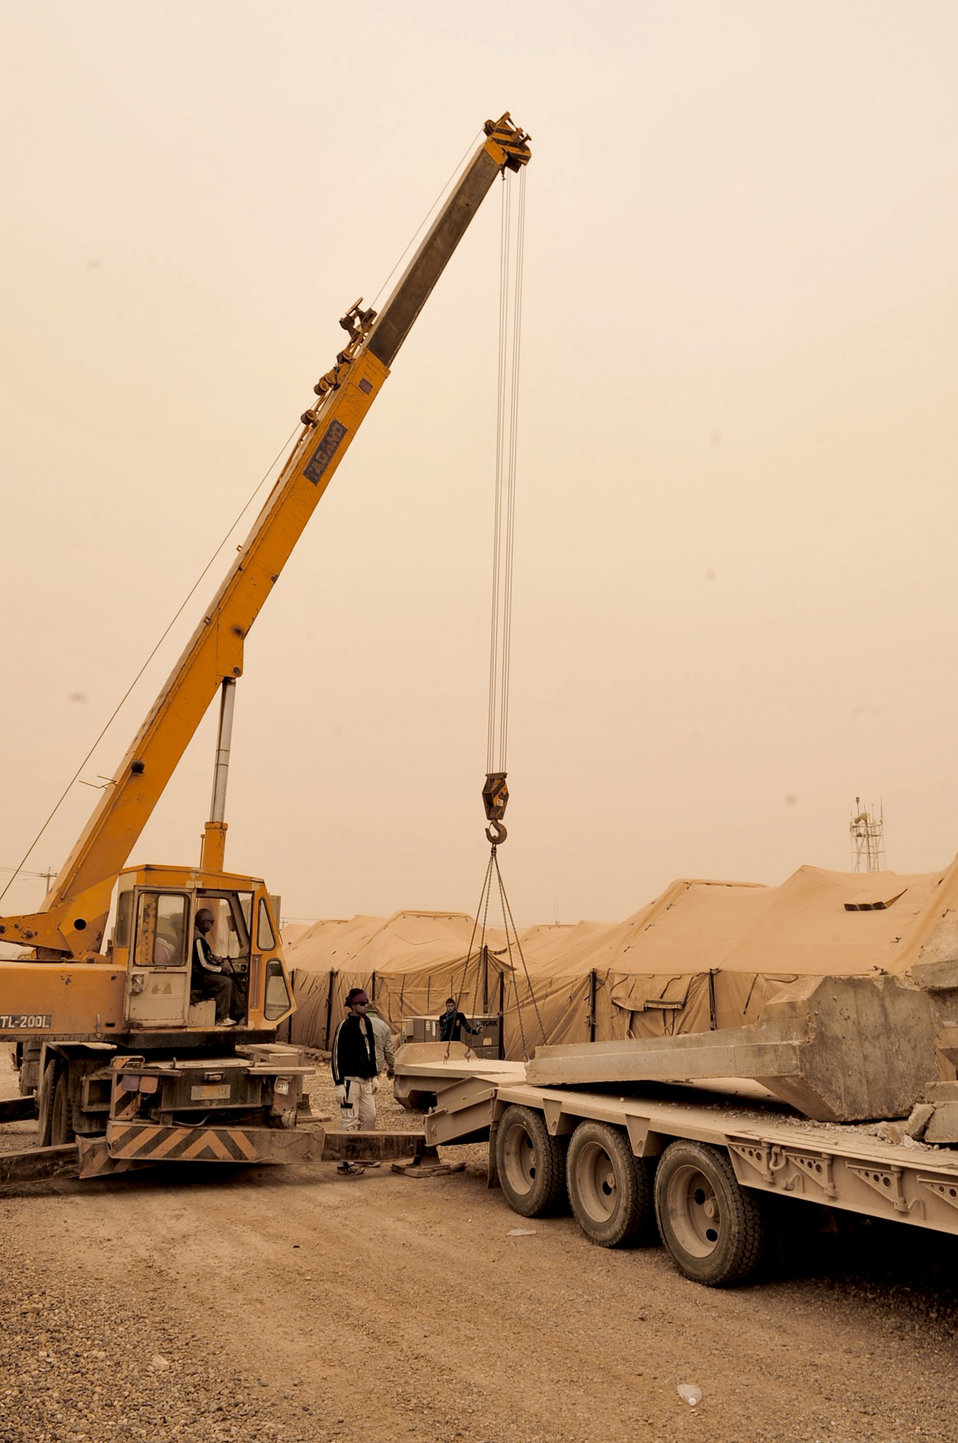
Airmen prepare Iraq bases for transition

Not even a sand storm in the Iraqi desert stops the removal of concrete T-wall barriers March 3, 2011, at Victory Base Complex in Baghdad. U.S. government officials have turned over 80 installations and facilities to the Government of Iraq under the current security agreement. Each T-wall section weighs 6 tons and is 12-feet tall.